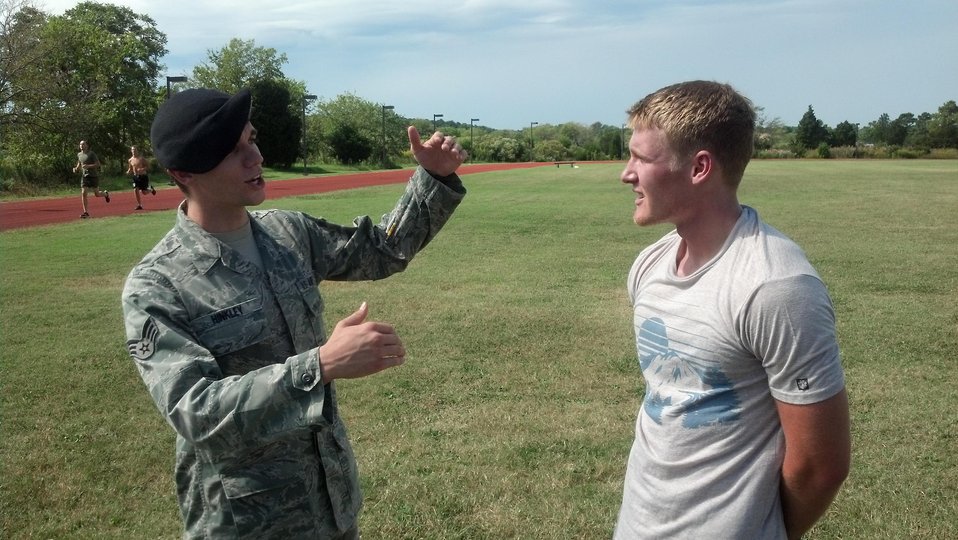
Special Operations Tryouts

An Air Force Tactical Air Control Party (TACP) mentors an applicant.